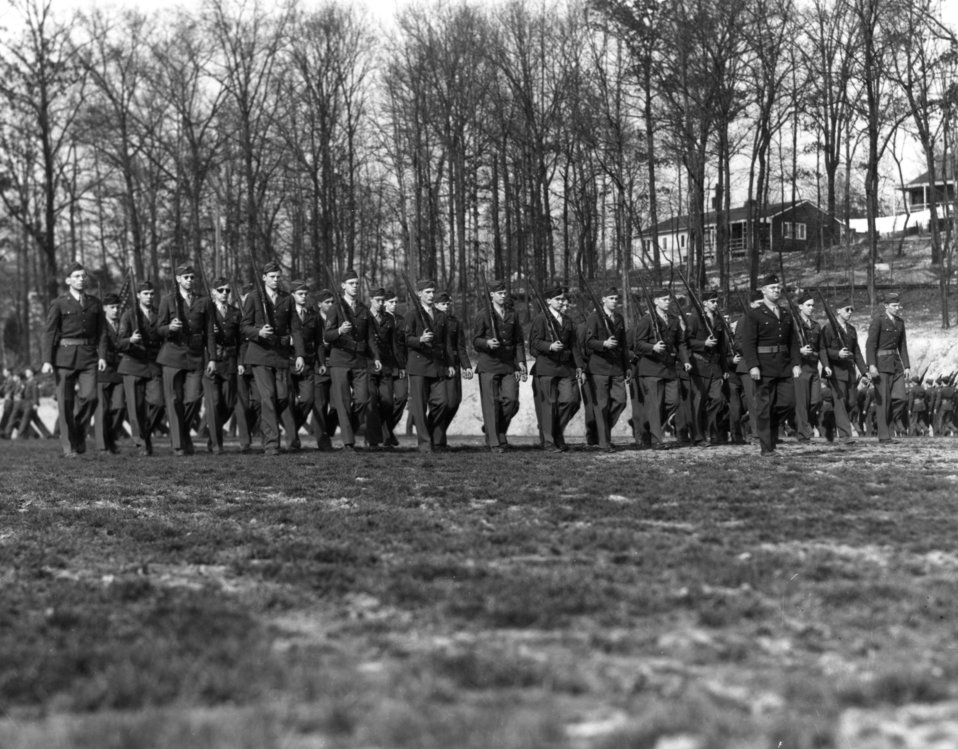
Army Activity at Oak Ridge